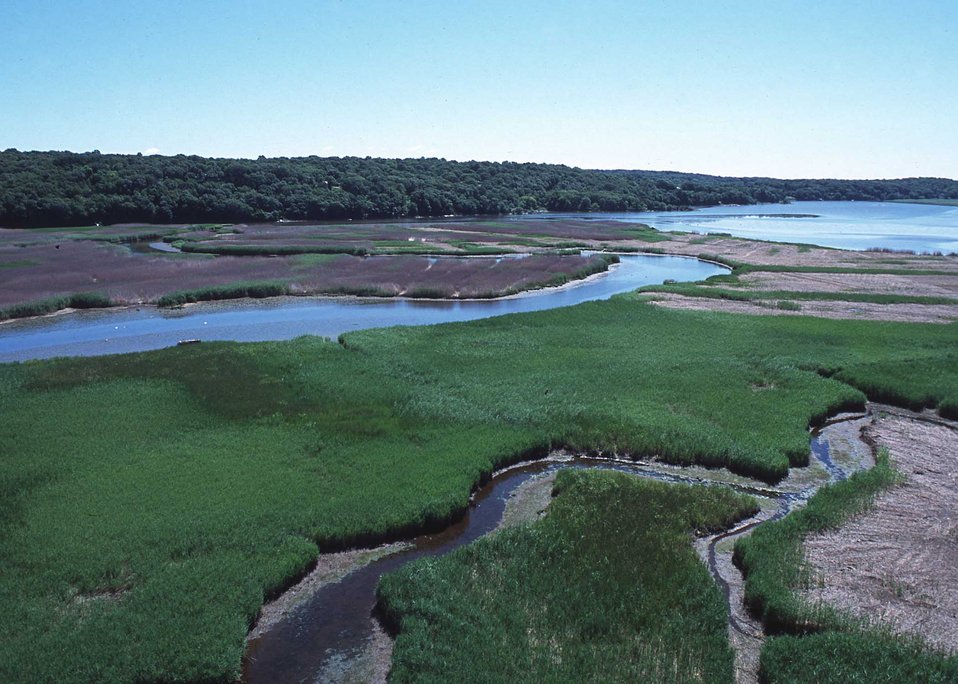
Connecticut River tideland habitat undergoing invasive plant control (light colored areas) and native plant community restoration.